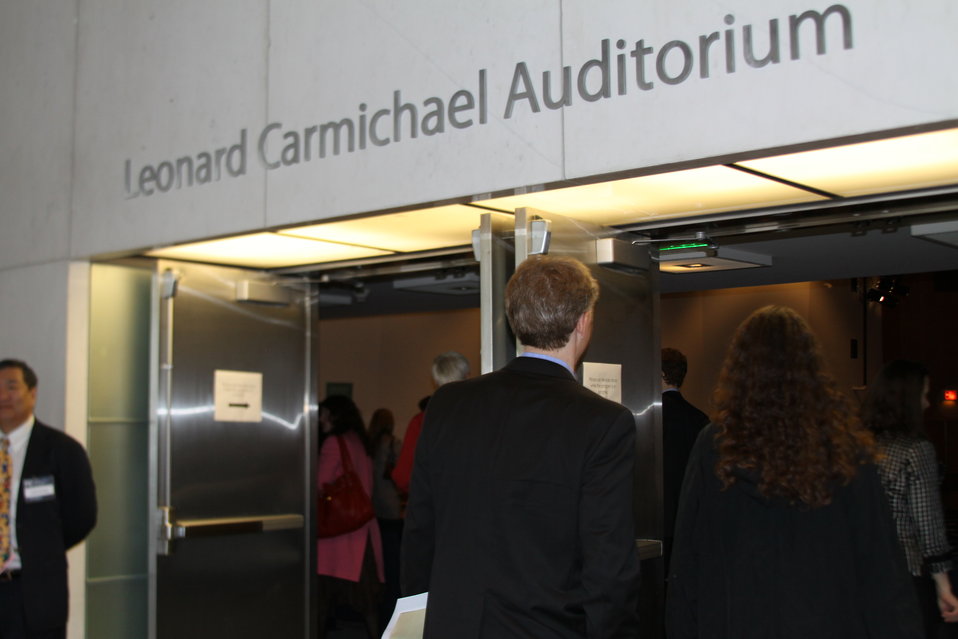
March 12, 2010- Smithsonian Broadband with Elmo